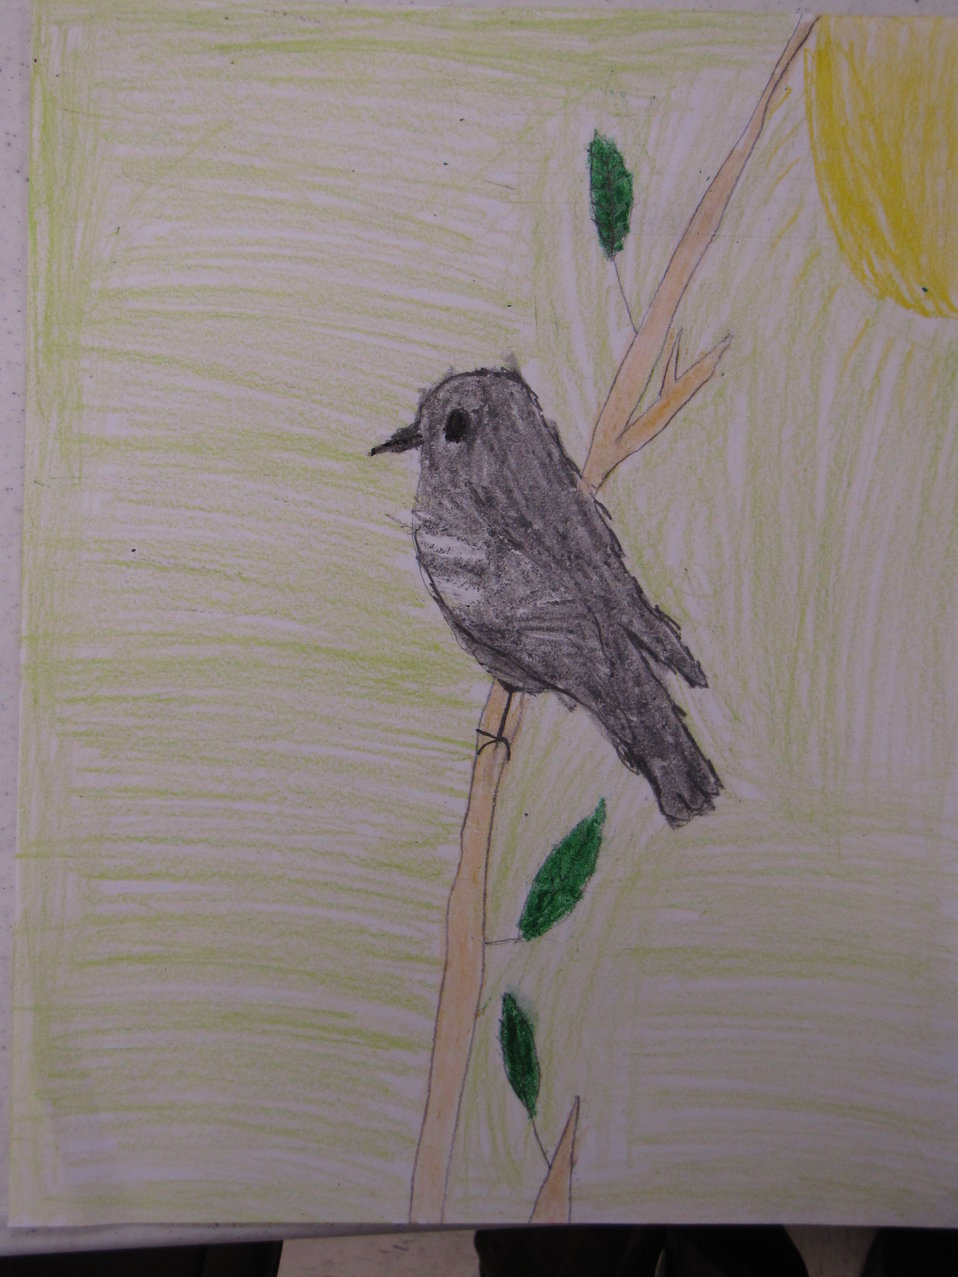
Dusky flycatcher, by Carter Johnson - 3rd grade. One of the class winners for the annual Bird Banner competition. Community school kids draw and color migratory birds and 90 of the winners from over 1000 entries are turned into poster-sized banners to hang down main street of Brigham City this summer.